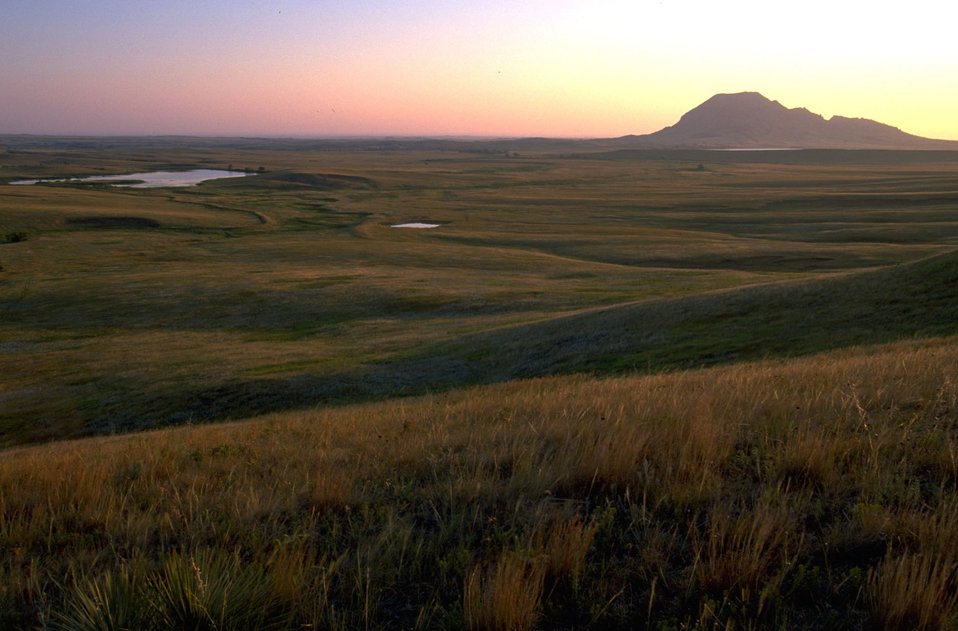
Prairie scenic with Fort Meade Reservoir and Bear Butte in the background